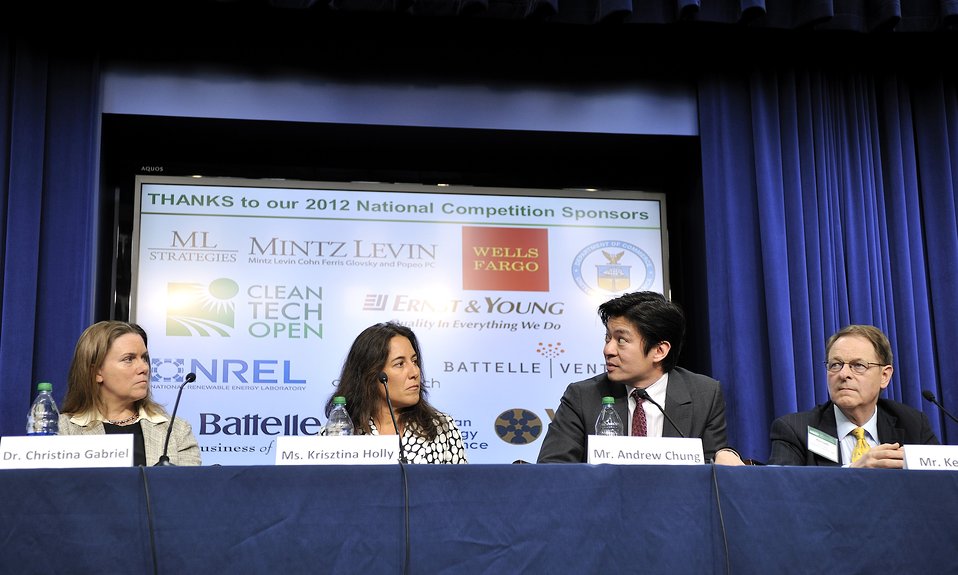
National Clean Energy Business Plan Competition

The National Clean Energy Business Plan Competition inspired nearly 300 university teams across the country to create new businesses to commercialize promising energy technologies developed at U.S. universities and the National Laboratories.